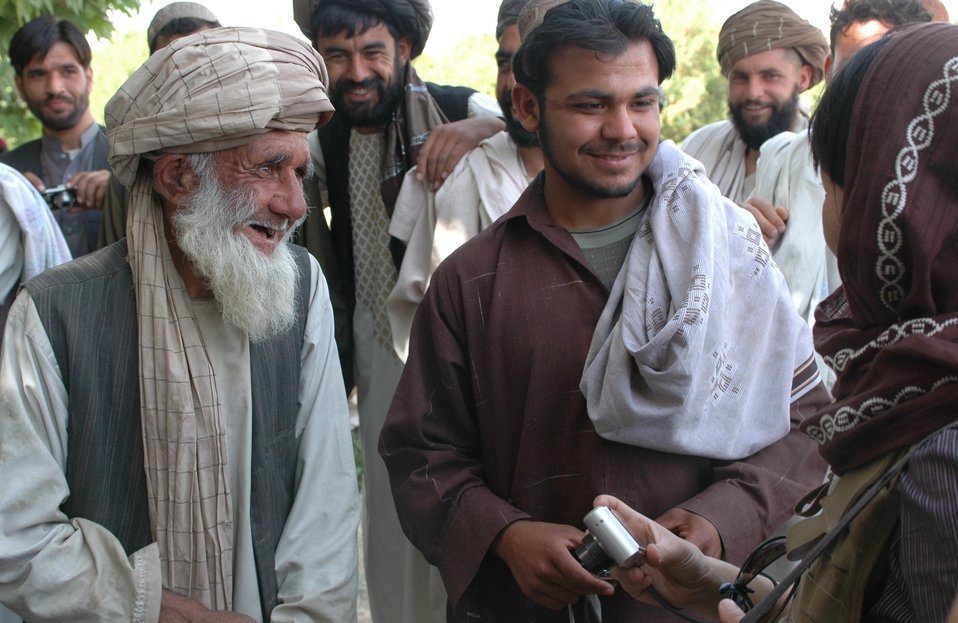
Dr Shah Visits Argandab April 10, 2010